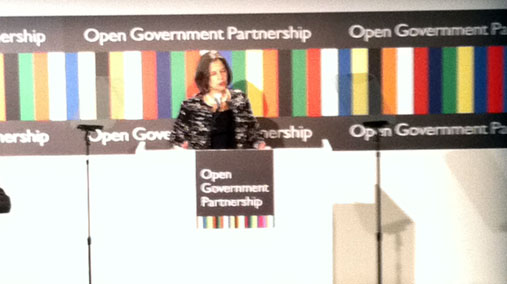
Under Secretary Otero Delivers Remarks on the Open Government Partnership

Under Secretary of State for Democracy and Global Affairs Maria Otero delivers remarks on the Open Government Partnership during the United Nations 66th General Assembly in New York, New York, on September 20, 2011.